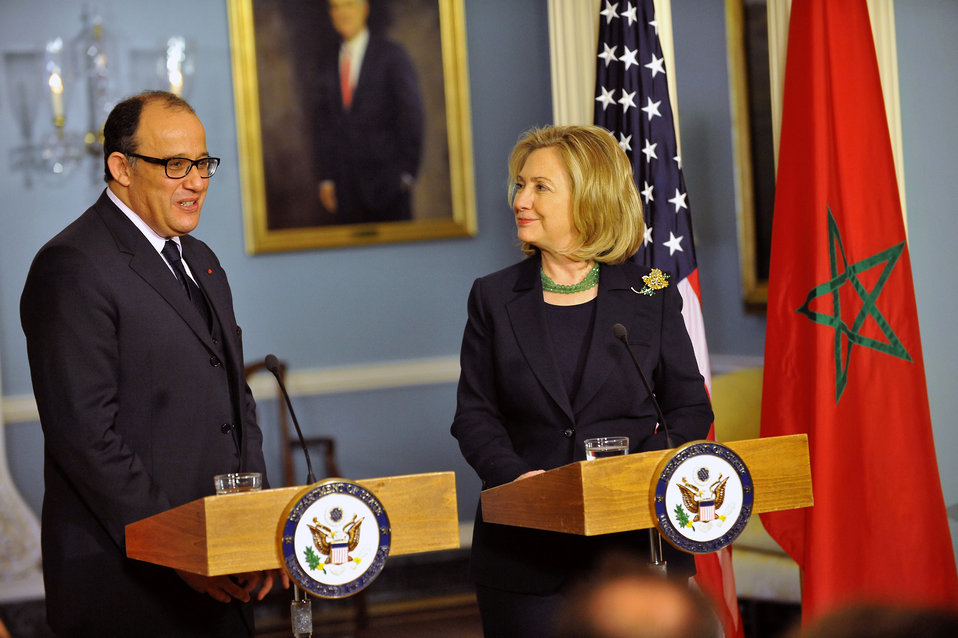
Secretary Clinton Holds a Joint Press Conference With Moroccan Foreign Affairs and Cooperation Minister Dr. Taieb Fassi Fihri

U.S. Secretary of State Hillary Rodham Clinton holds a joint press conference with Moroccan Foreign Affairs and Cooperation Minister Dr. Taieb Fassi Fihri after their bilateral meeting, at the U.S. Department of State in Washington, D.C., on March 23, 2011.